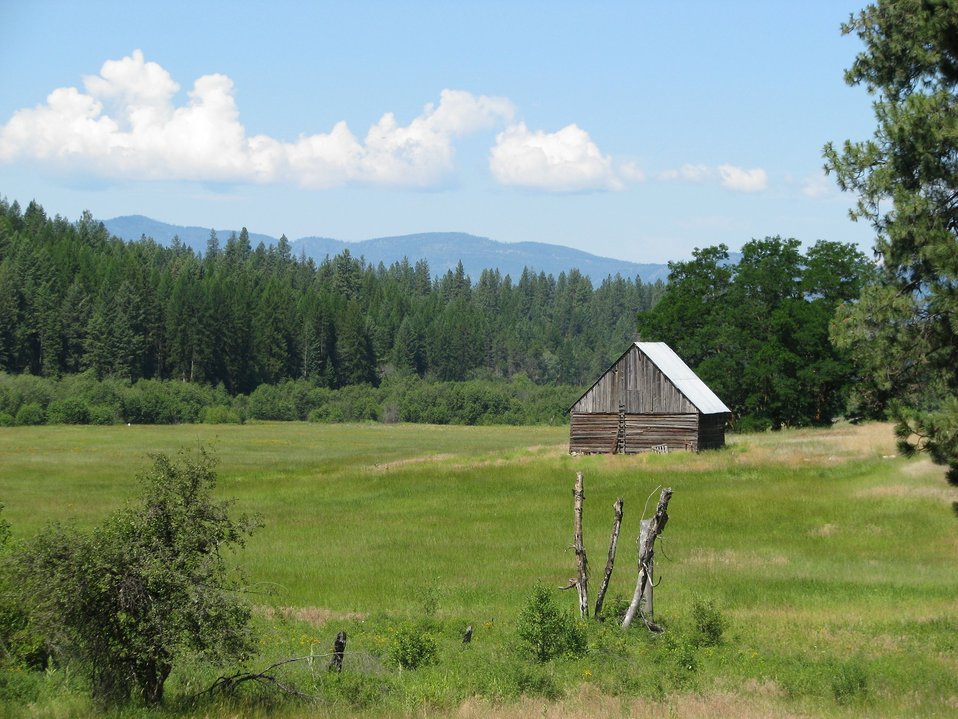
Hartnett Homestead1 -- Little Pend Oreille NWR, Washington